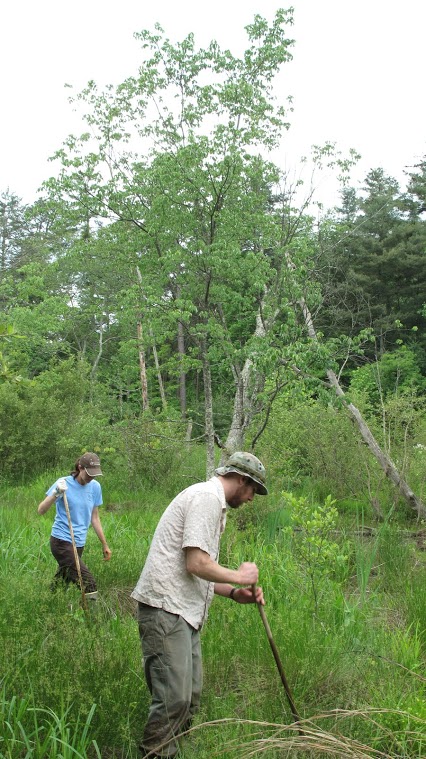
Bog turtle

Scientific name: Clemmys muhlenbergii
Status: Threatened and similarity of appearance

Sue Cameron and Charlie Edens searching for bog turtles.